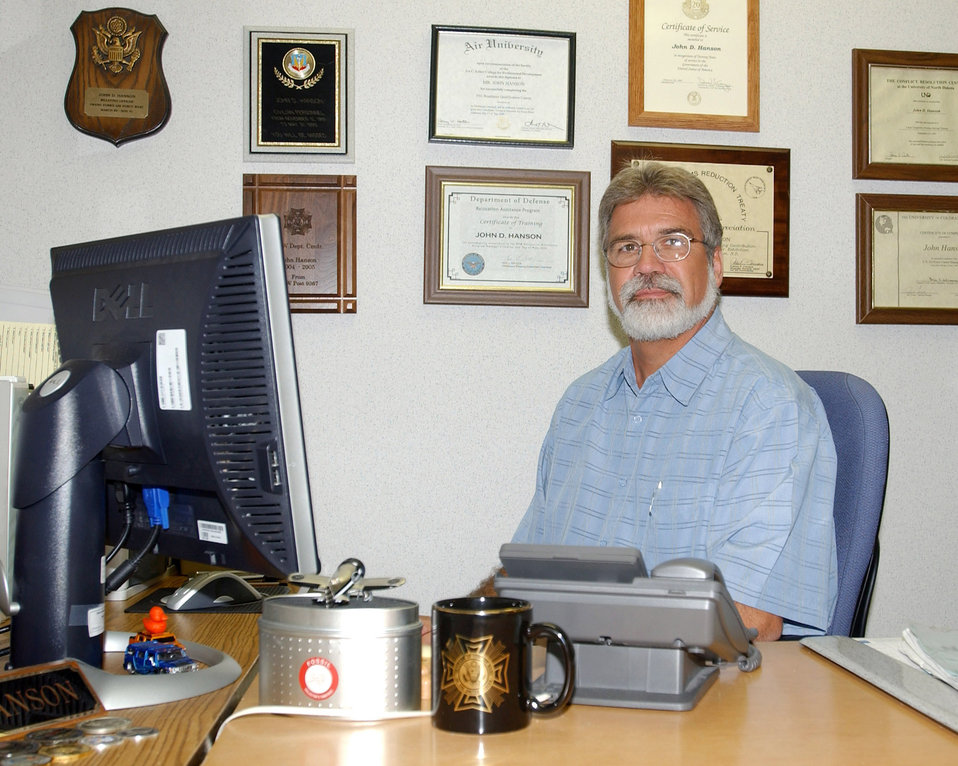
Award recipient

GRAND FORKS AIR FORCE BASE, N.D. (AFPN) -- John Hanson, who works at the family support center here, earned a 2005 Department of Defense award.